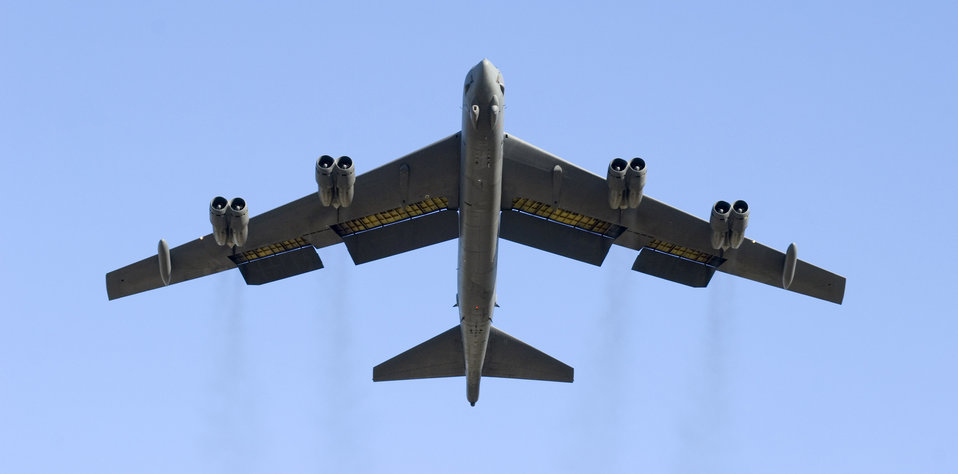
B-52 operations

Two B-52 Stratofortress bombers, like one shown here, completed a long-range training sortie from Andersen Air Force Base, Guam, to Australia's Delamere Air Weapons Range in the Northern Territory Oct. 24. The B-52s, from the 23rd Expeditionary Bomb Squadron, are part of the